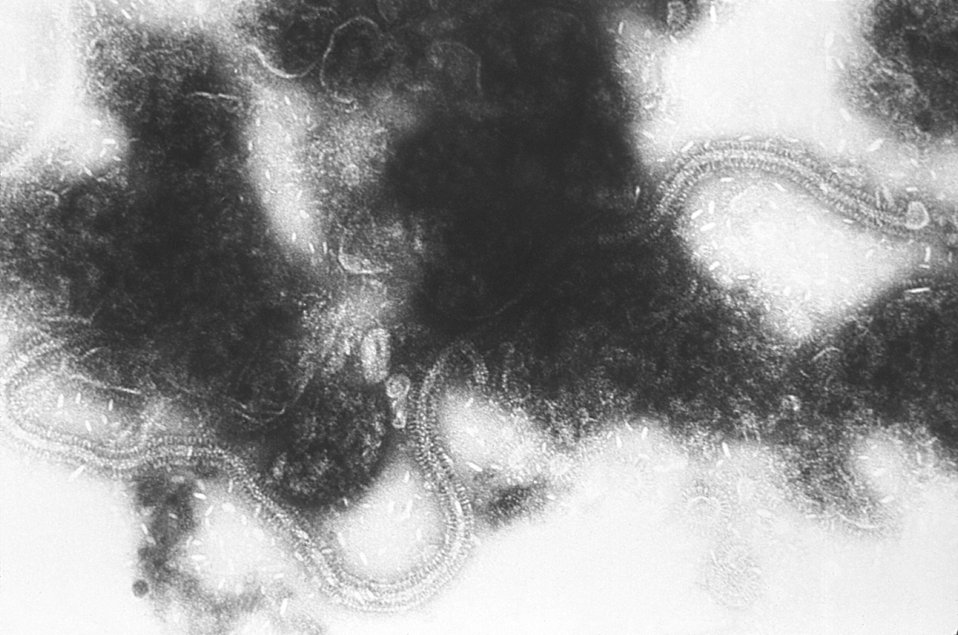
This electron micrograph depicts the Respiratory Syncytial Virus (RSV) pathogen.